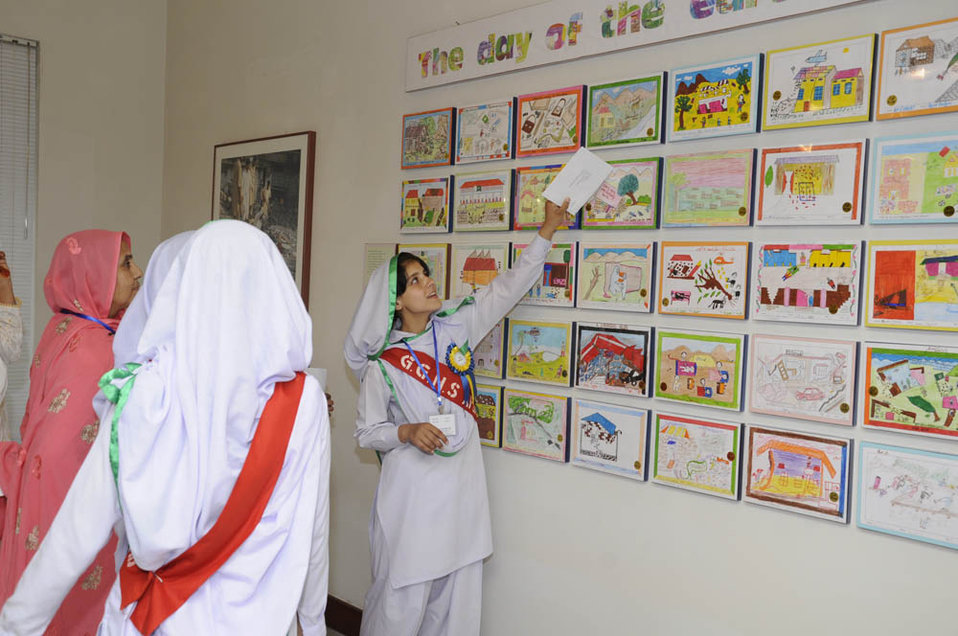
Photography and Drawing Exhibition on Pakistan 2005 Earthquake “Rebuilding Together: With Dignity and Hope”

Students from 2005 earthquake affected areas looking at their drawings at a photo exhibition “Rebuilding Together: With Dignity and Hope” at Pakistan National Council of Arts (PNCA) sponsored by USAID.